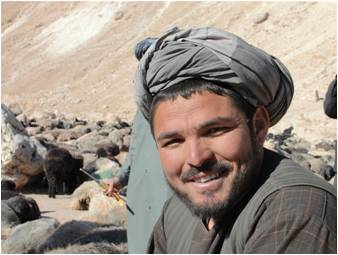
Livestock Vaccinated in Faryab

Livestock and livestock products are the main source of income for many remote communities throughout Faryab Province, and improving their health is of primary importance to increase prospects for licit sales growth in the Northern region of Afgha-nistan. However, worm parasite infections of livestock reduce fertility, weight, and milk production leading to significant eco-nomic loss. Additionally, access to veterinary care is limited.
To eliminate intestinal parasites and improve utilization of scarce fodder over the winter, USAID’s Incentives Driving Economic Alternatives for the North, East, and West (IDEA-NEW) project supported a month-long livestock de-worming campaign.
Thirty local paravets (the equivalent of community health work-ers for animals) trained through USAID’s Accelerating Sustain-able Agriculture Program (ASAP) in 2007, implemented the campaign. The district governments and community develop-ment councils brought people together to have their animals de-wormed. IDEA-NEW provided organizational oversight, finan-cial incentives for paravets, and educational materials for partic-ipating farmers. The US Army and Dutch Committee for Afghanistan provided de-worming medicine and helped to monitor the campaign.
“It’s a great pleasure for us that our animals are given medicine to weaken and kill microbes every winter. I hope most of our animals stay alive and fat after this campaign,” said Ebrahim, a farmer in Bilchiragh District of Faryab. “I only pay one Afghani per goat or sheep to the local Shura. It is a great service and we thank all who helped us in this campaign.”
In total, community development councils raised 277,500 Afg-hanis ($4,900) from medicine administered to the livestock across the province. Communities will use this money for addi-tional livestock services from area paravets.
Working in close collaboration with the Faryab Provincial Direc-torate of Agriculture, US Army, Dutch Committee for Afghanis-tan, and USAID’s ASAP, the IDEA-NEW campaign underscores the importance of combining resources to make a significant impact on communities.